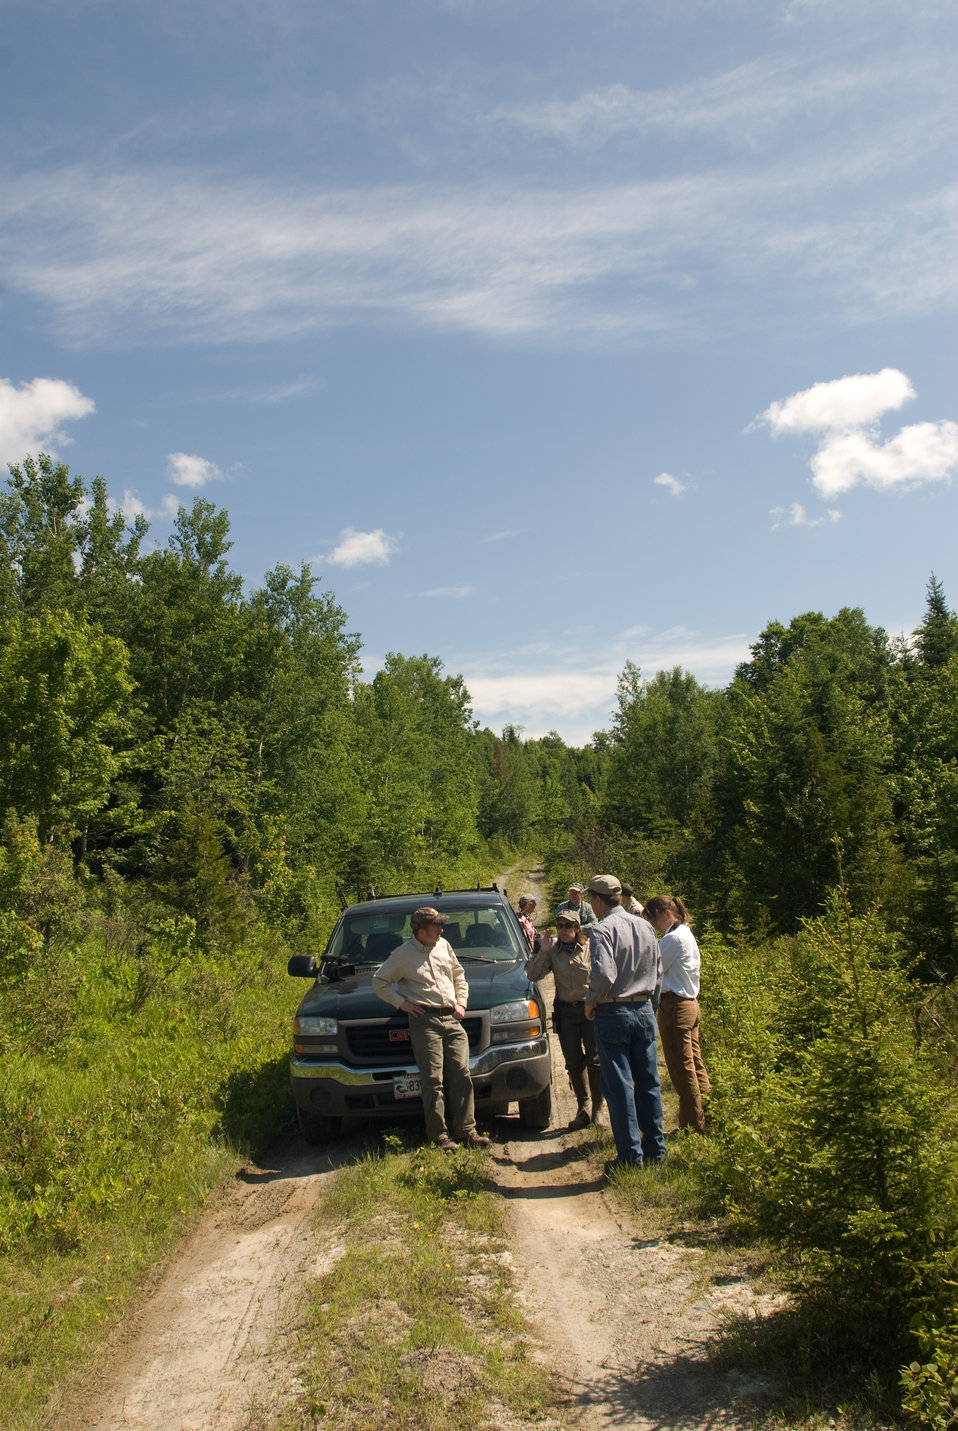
Logging Roads

Access to the areas of study was limited by private logging roads. A team is shown here staging for a hike into a area where Canada Lynx are known to be 'denning'.